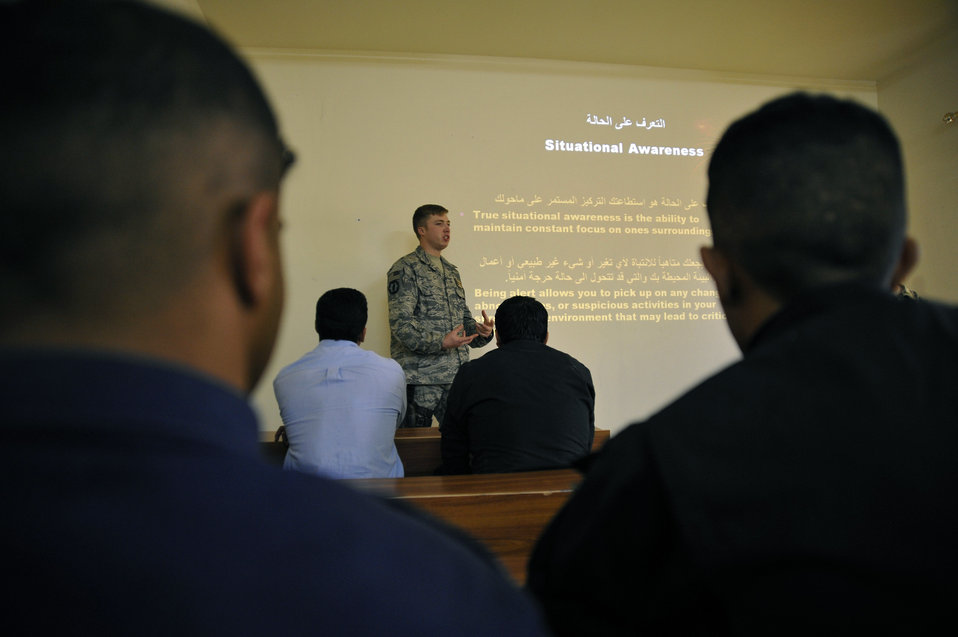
Airmen lead training course for Iraqi police

Staff Sgt. Michael Gomez instructs a class of Iraqi police officers about using situational awareness Nov. 18, 2009, in Baghdad, Iraq. Sergeant Gomez is assigned to the 732nd Expeditionary Security Forces Squadron Det. 2.